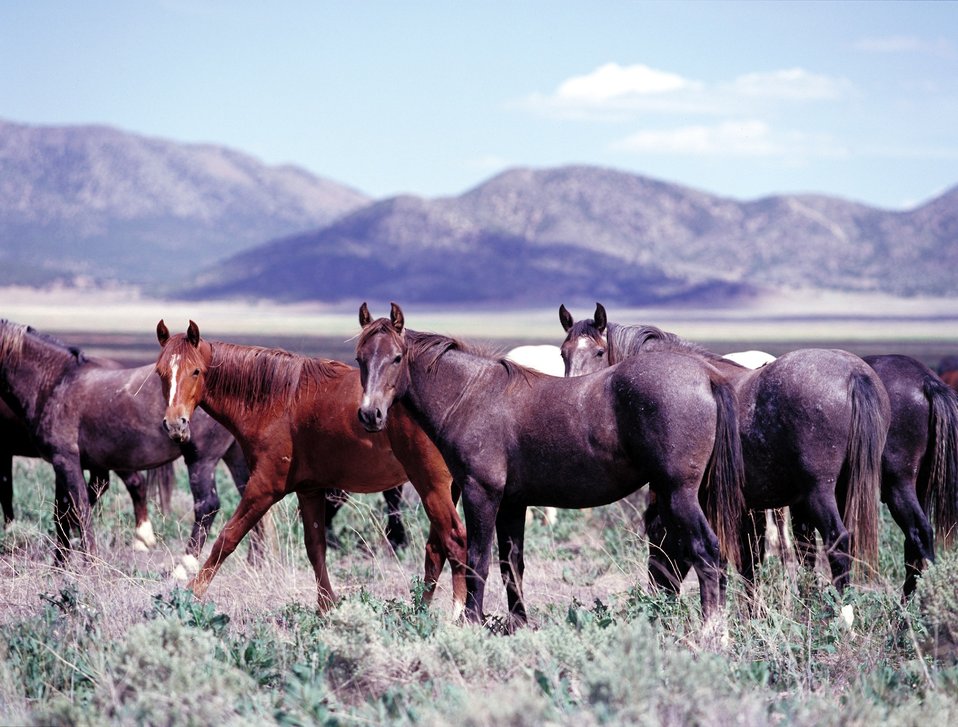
Onaqui Herd near Dugway, Utah.